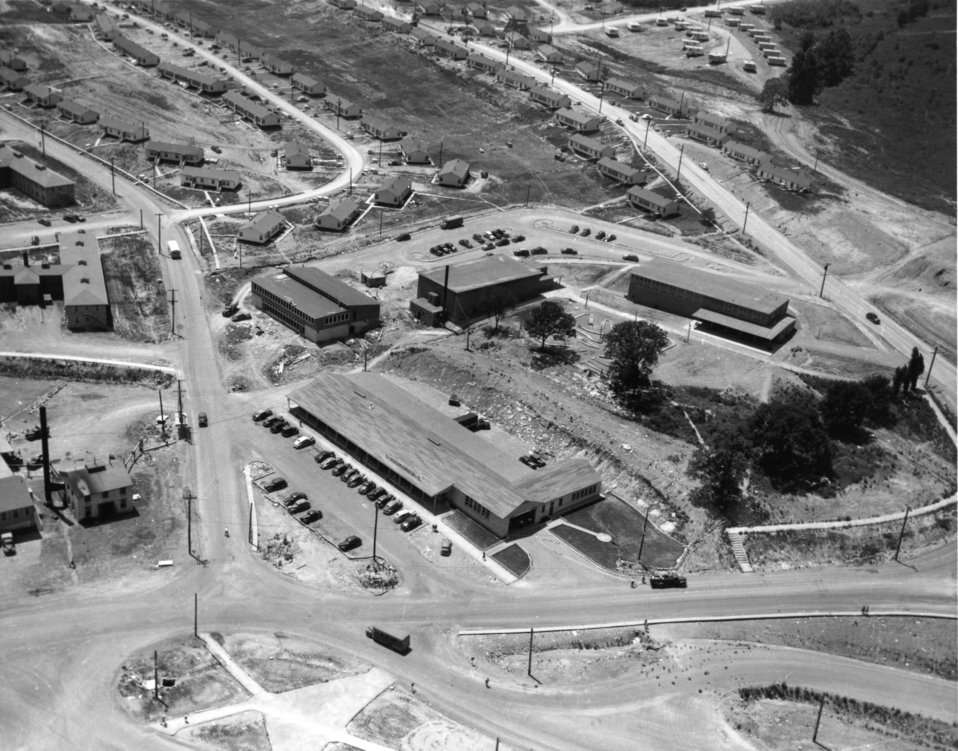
Aerial of Oak Ridge